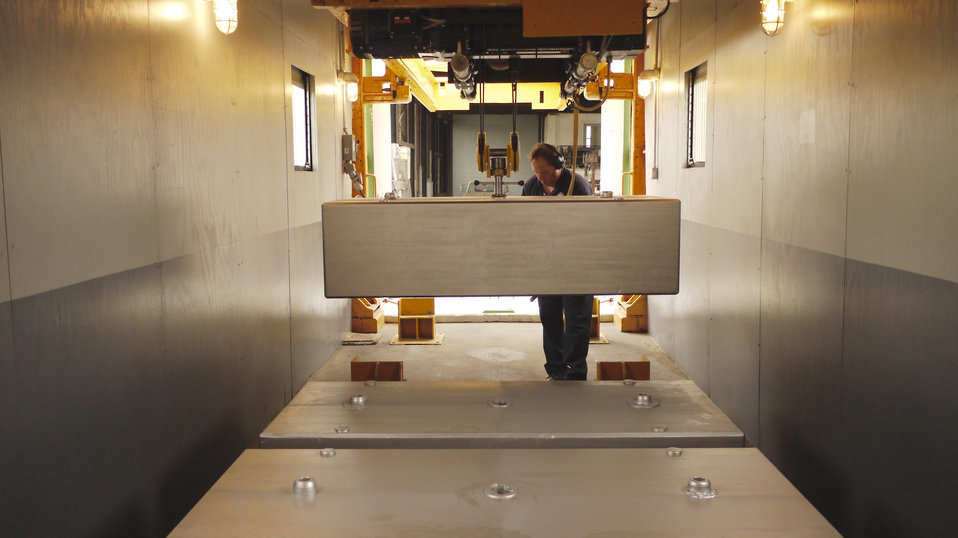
This is the U.S. Department of Agriculture’s (USDA) Grain Inspection, Packers, and Stockyard Administration (GIPSA) FGWX700000 test car unit with USDA GIPSA industrial specialist Marcus Harwitz unloading the 10,000 lb. test weight cart and 10,000 lb. test weight standards (blocks) at the USDA GIPSA Master Scale Depot in Chicago, IL on Jul 2, 2013. These weights can be loaded onto the test cart to make a total of a 100,000 lb. test weight group including the cart that is used to test railroad track scales for calibration. . USDA GIPSA entered into an agreement with the National Institute of Standards and Technology (NIST) and the Association of American Railroads (AAR) in 1980 transferring responsibility to USDA’s GIPSA to maintain the Master Scale facility in Chicago, IL and calibrate all the master scales in the continental U.S. annually.